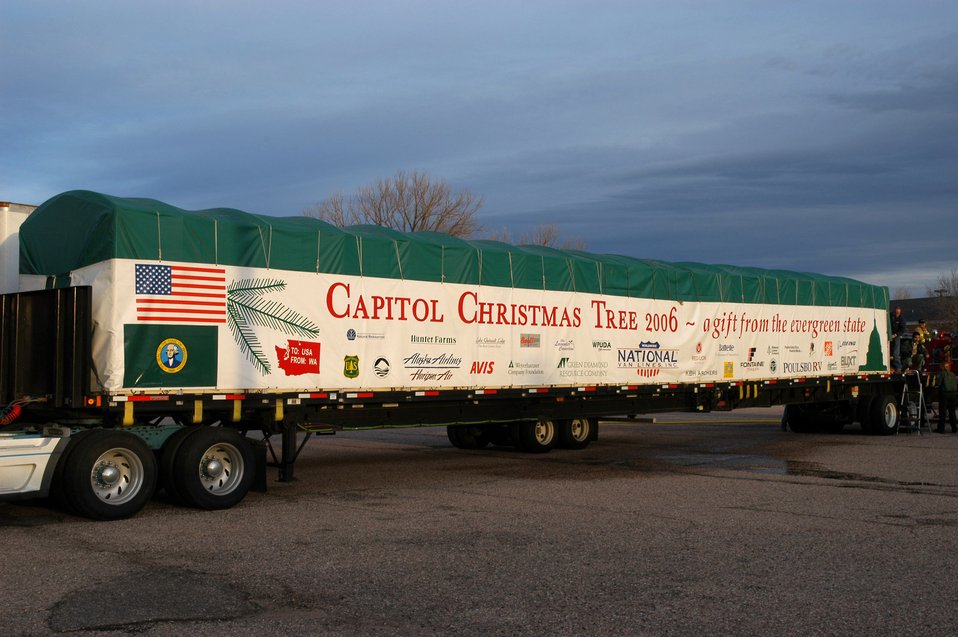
Capitol Christmas Tree visits Wyoming base

The 2006 Capitol Christmas Tree stops at F.E. Warren Air Force Base, Wyo., Nov. 20 on its way to Washington, D.C. The 65 foot-tall Pacific silver fir came from the Olympic National Forest in Washington.